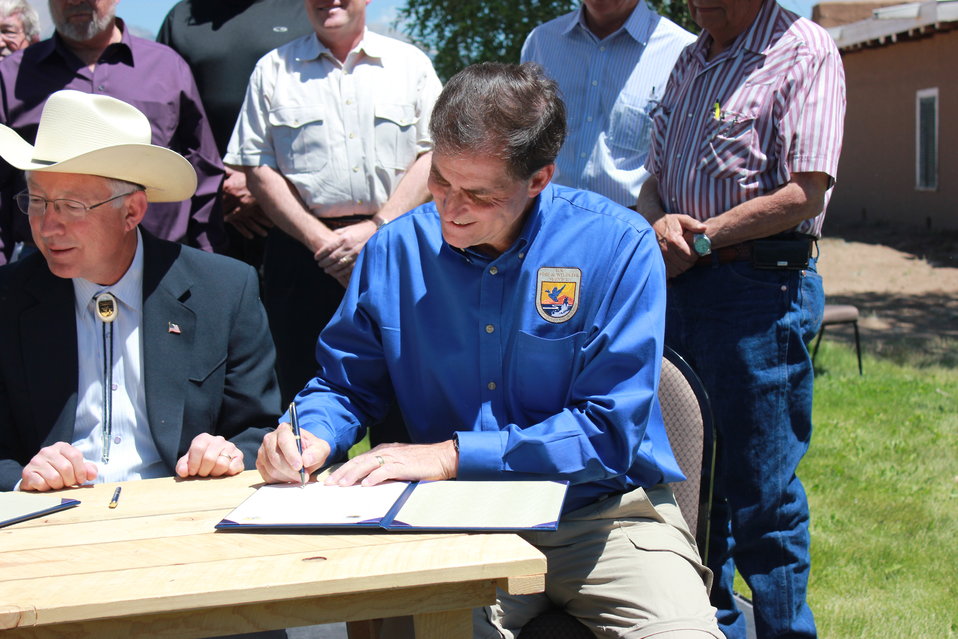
Historic Conservation Easement in Sangre de Cristo Mountains